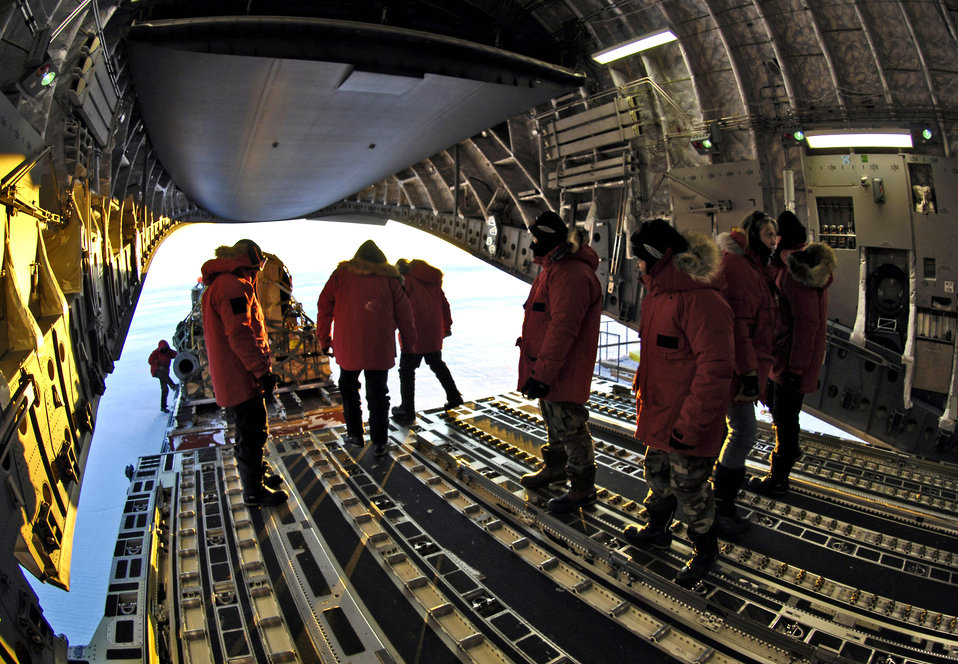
Winter flights to Antarctica wrap up

Loadmasters unload cargo from a C-17 Globemaster III during an Operation Deep Freeze winter fly-in mission Aug. 25 at Pegasus White Ice Runway, Antarctica. A C-17 and 31 Airmen from McChord Air Force Base, Wash., conducted the annual winter fly-in augmentation of scientists, support staff, food and equipment for the U.S. Antarctic Program at McMurdo Station, Antarctica.